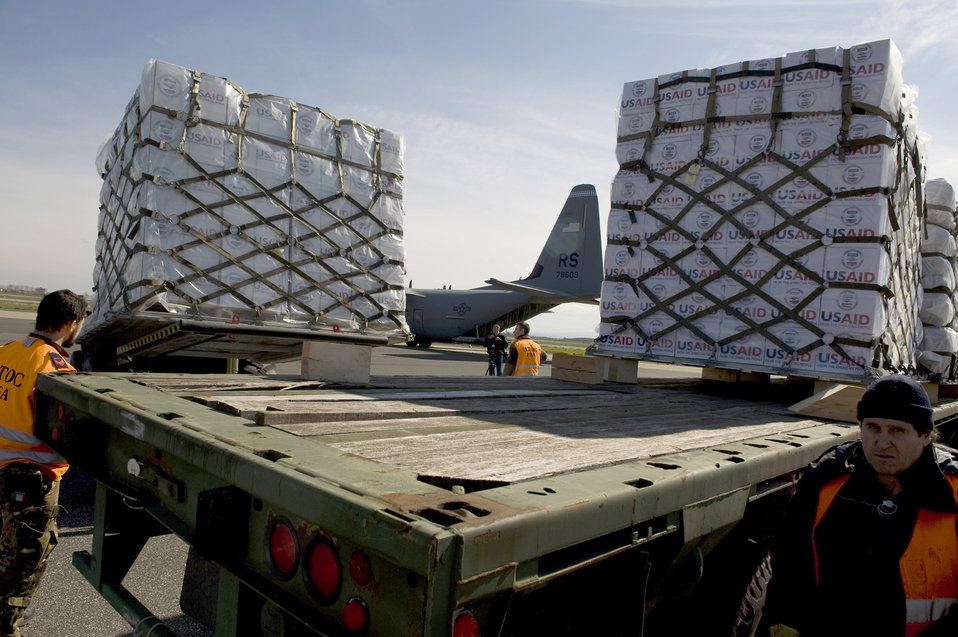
US Aid to Tunisia

March 4th 2011, U.S. Airmen from the 435th Air Mobility Squadron out of Ramstein Air Base load blankets, tarps and water containers onto C-130 aircraft in Pisa, Italy. These aircraft will then fly these supplies to Tunisia. The U.S. Government is working intensely with the International community to meet the humanitarian needs of the Lybian people and others in the country who fled across the borders. U.S. Army Photo by Staff Sgt. Brendan Stephens. Approved for Public Release